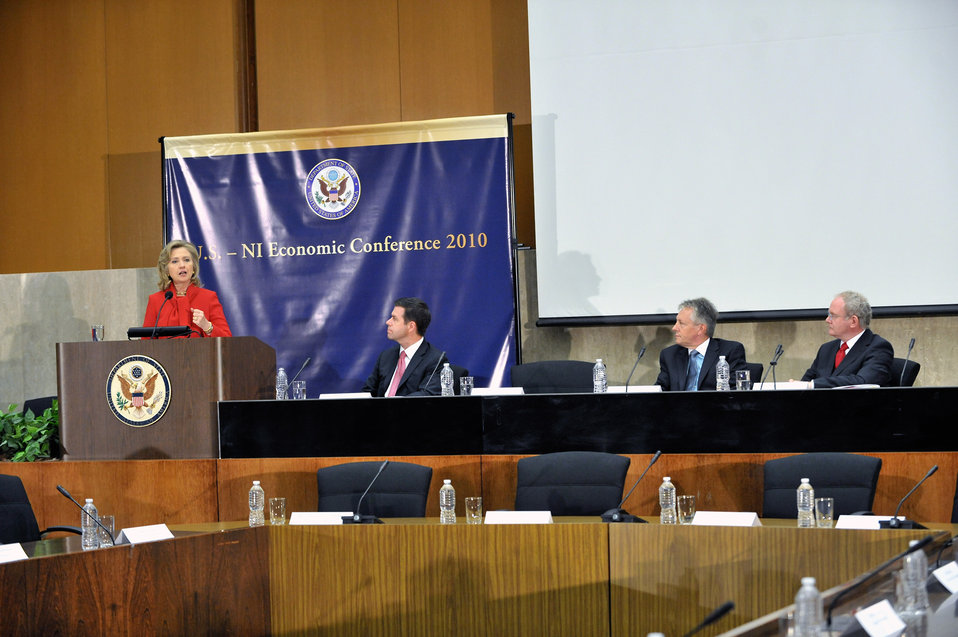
Secretary Clinton Delivers Opening Remarks to the U.S.-Northern Ireland Economic Conference

U.S. Secretary of State Hillary Rodham Clinton delivers opening remarks to the U.S.-Northern Ireland Economic Conference at the U.S. Department of State in Washington, D.C., on October 19, 2010.